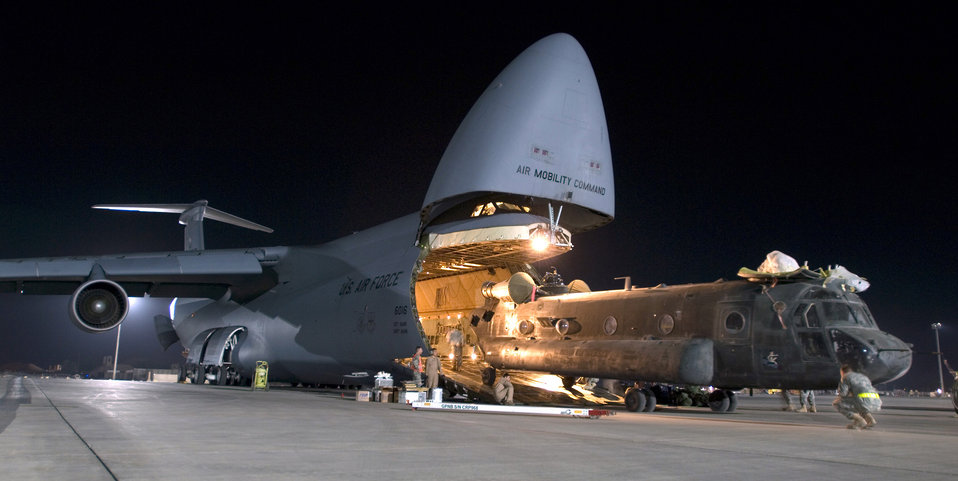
Open wide!

Airmen load a CH-47D Chinook heavy-lift helicopter into the cargo bay of a C-5 Galaxy Aug. 3 at Joint Base Balad, Iraq. More than 950 cargo aircraft, 12,000 tons of cargo and 19,000 passengers are processed each month, making it the busiest aerial port operation in the Department of Defense. This C-5 is deployed from the 22nd Airlift Squadron at Travis Air Force Base, Calif. The Chinook belongs to the Army's Bravo Company, 1st Battalion, 52nd Aviation Regiment, which is deployed to Al Toqaddum, Iraq.